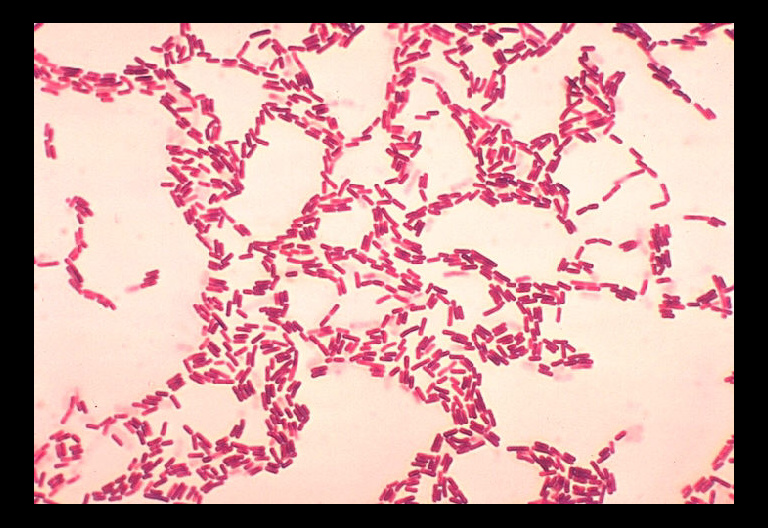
Bacillus coagulans. Gram stain.